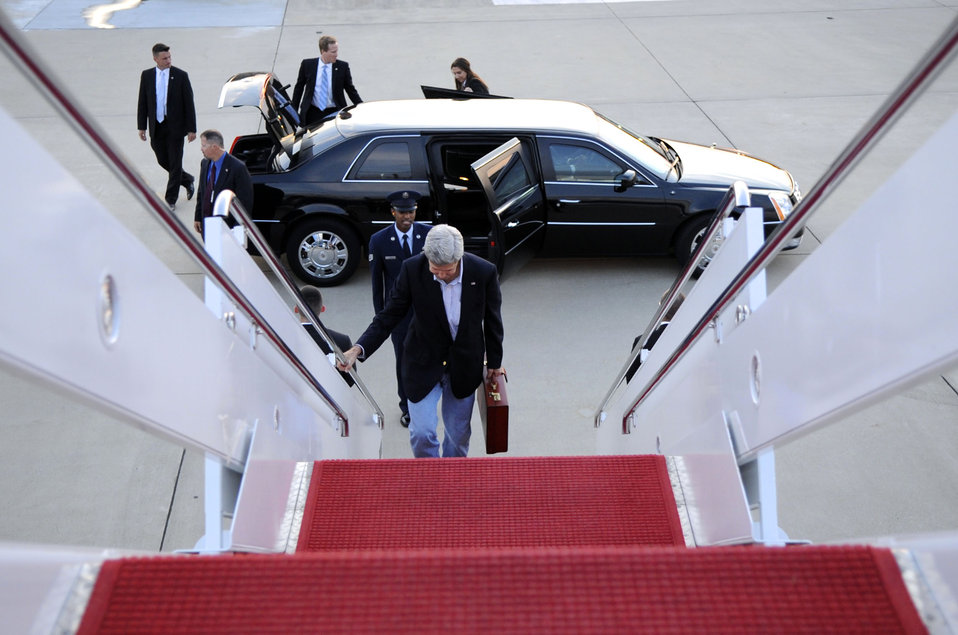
Secretary Kerry Departs for Islamabad, Pakistan

U.S. Secretary of State John Kerry climbs the stairs leading to the U.S. Air Force jet before departing from Andrews Air Force Base in in Prince George's County, Maryland, for an unannounced trip to Islamabad, Pakistan, on July 30, 2013.